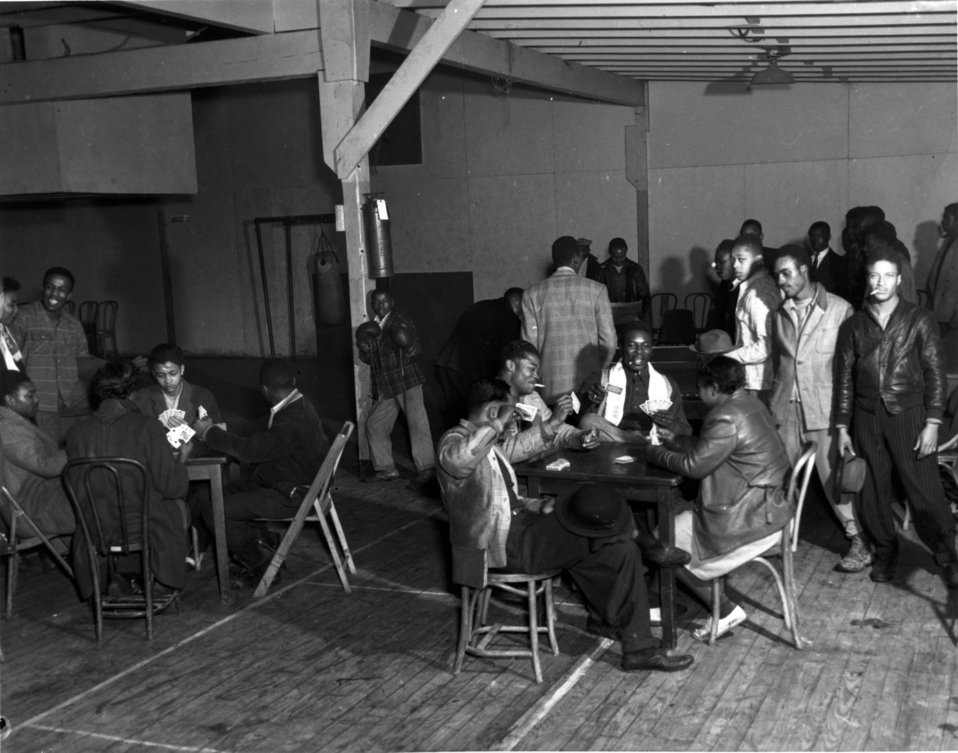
Recreation at Oak Ridge